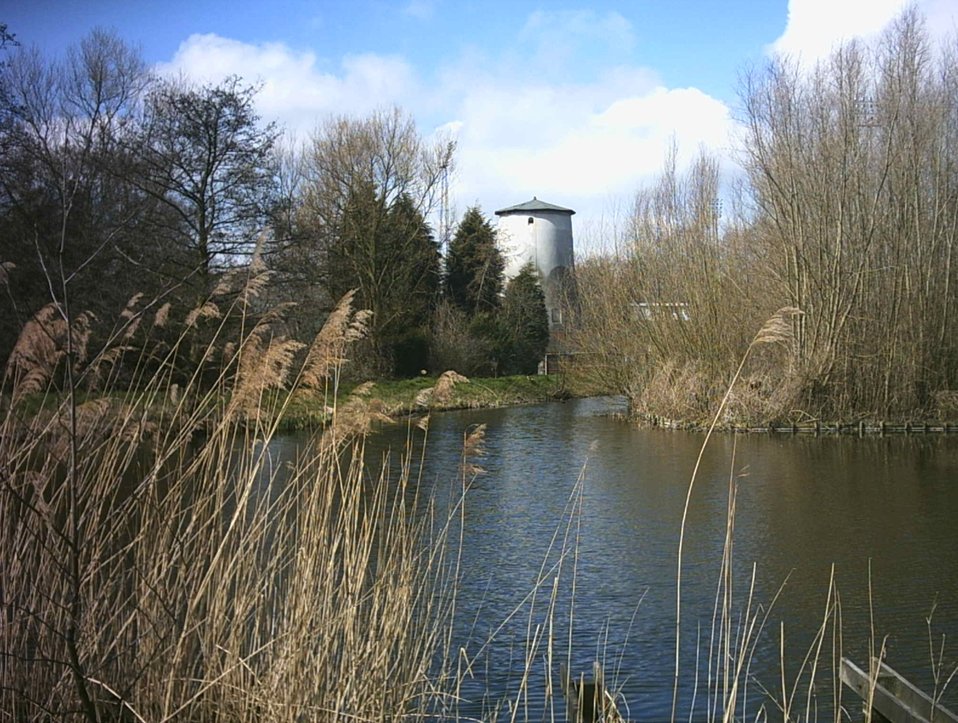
Babbersmolen langs de Poldervaart in Schiedam